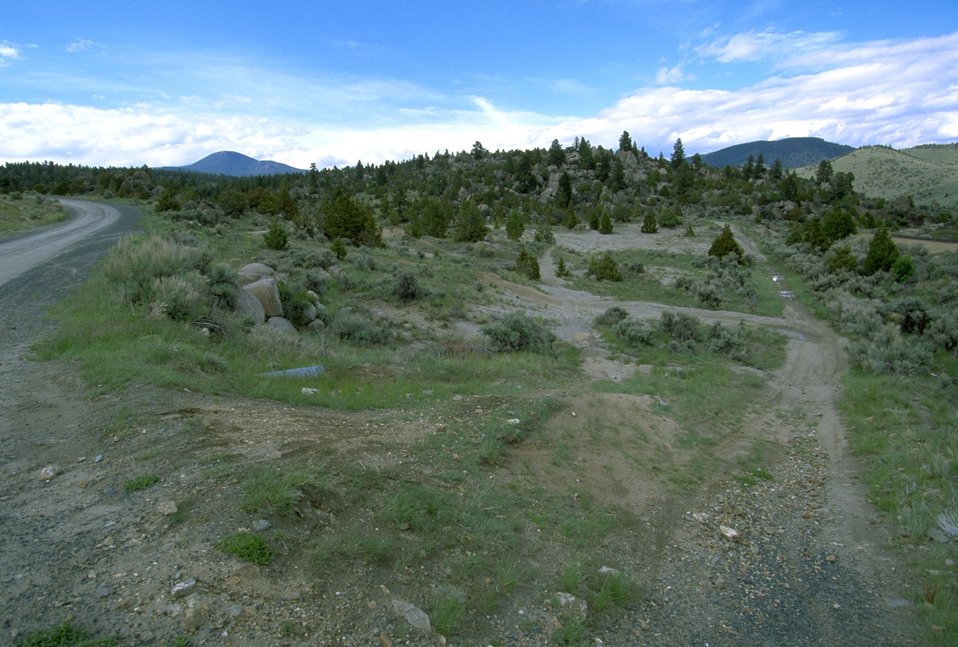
Roads amd trails in the Pipestone Hills area